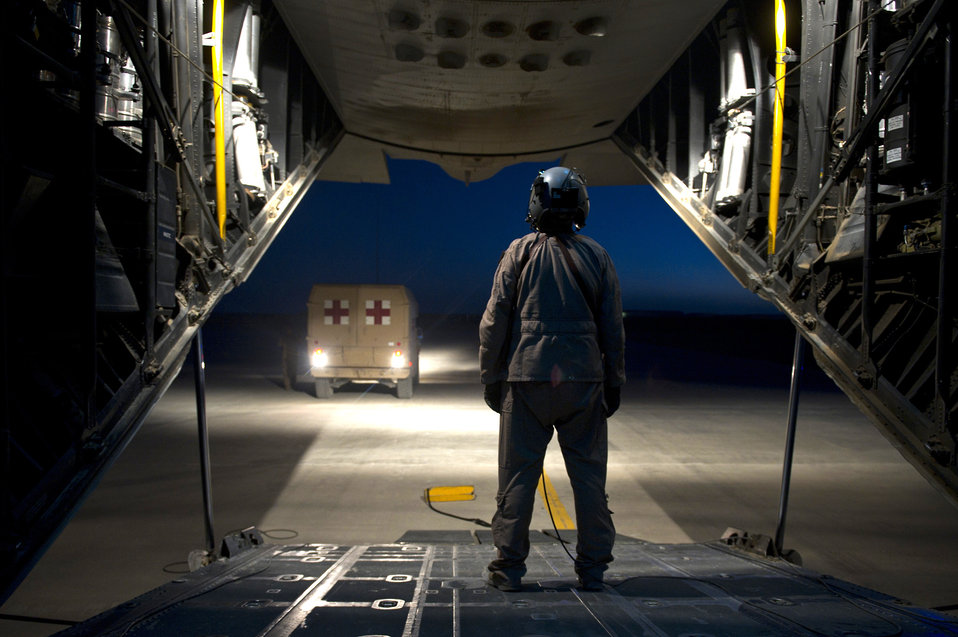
In good hands

Staff Sgt. Mary Sierra prepares to guide an ambulance into place, June 1, 2011, in Afghanistan, prior to loading a patient onto an HC-130P King. Sergeant Sierra is a loadmaster assigned to the 76th Expeditionary Rescue Squadron.